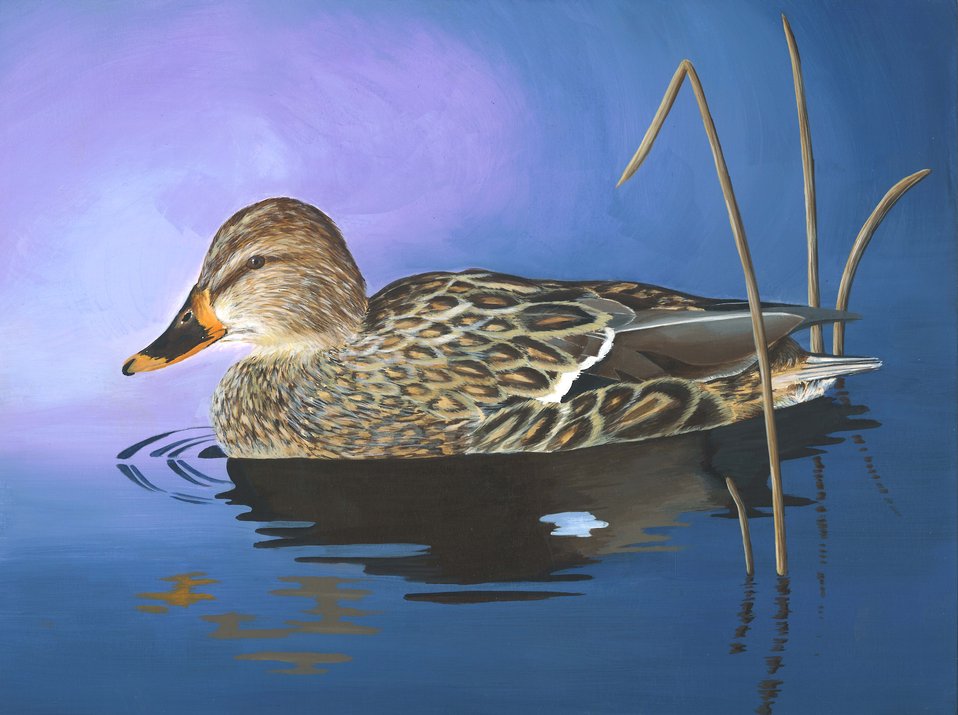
RhodeIsland

2012 Jr Duck Stamp Program
State Best of Show
Rhode Island